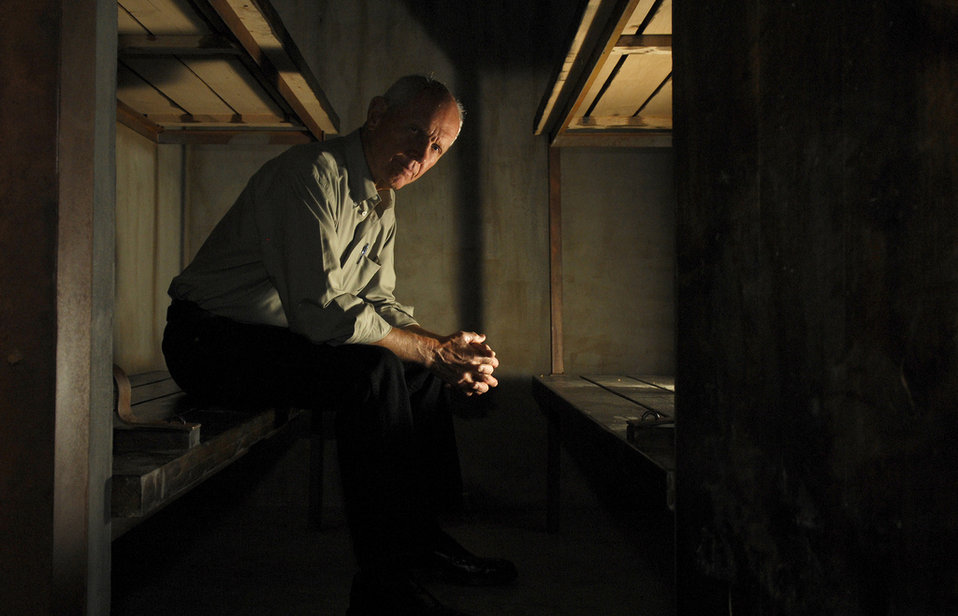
Pioneers in Blue

Retired Lt. Col. Jay Hess served in the Air Force from 1953 to 1973 as a pilot and a prisoner of war. Colonel Hess is featured in